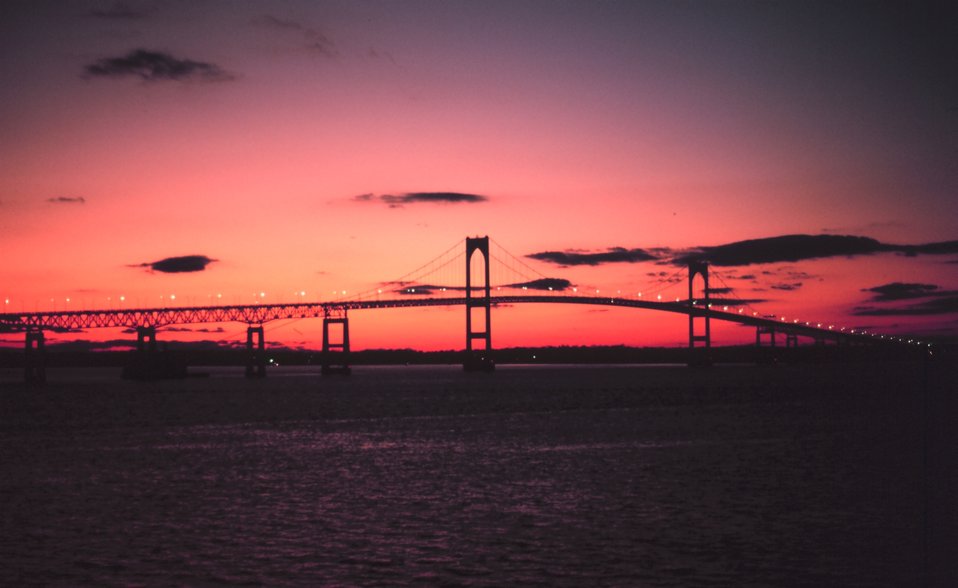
The Newport Bridge at sunset